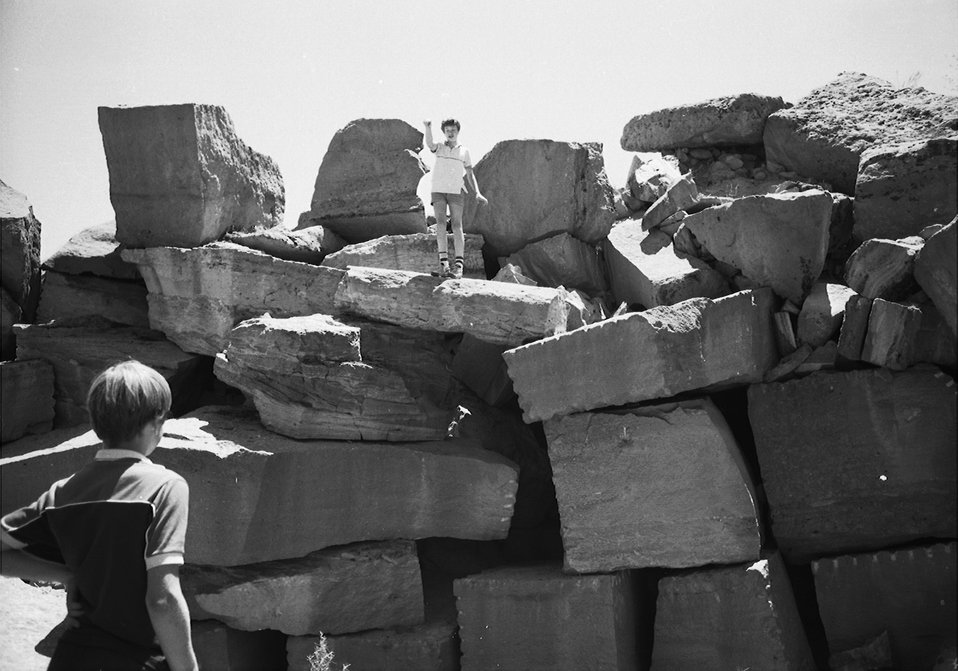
Table Rock Four Rivers LSRD Lower Snake River District